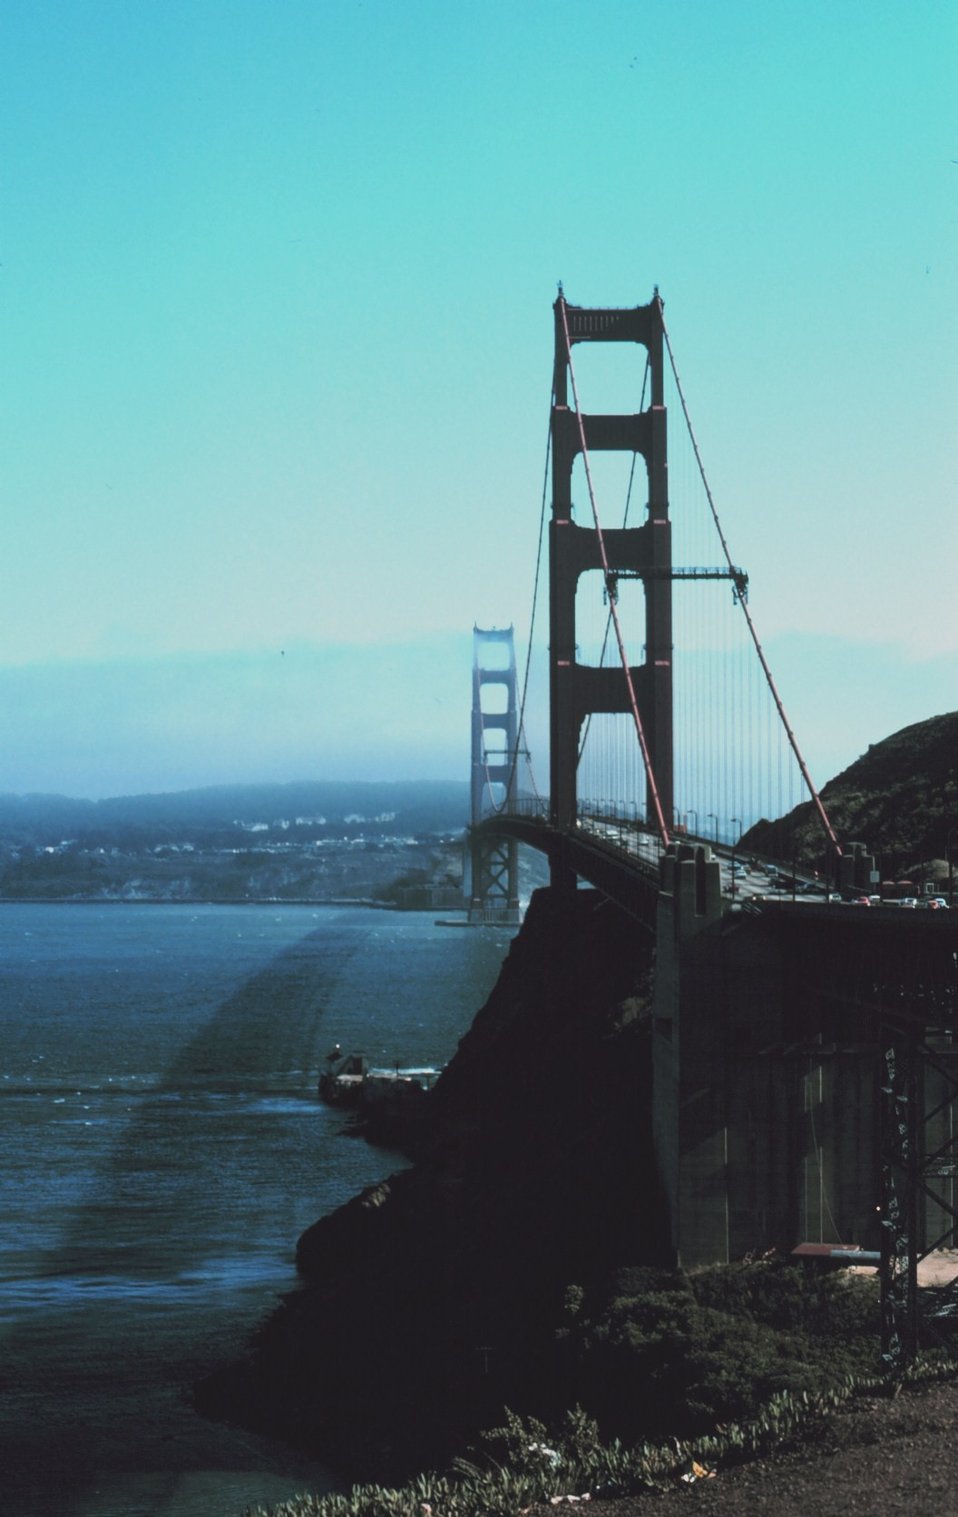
The Golden Gate Bridge as seen from a turnout on Highway 101.